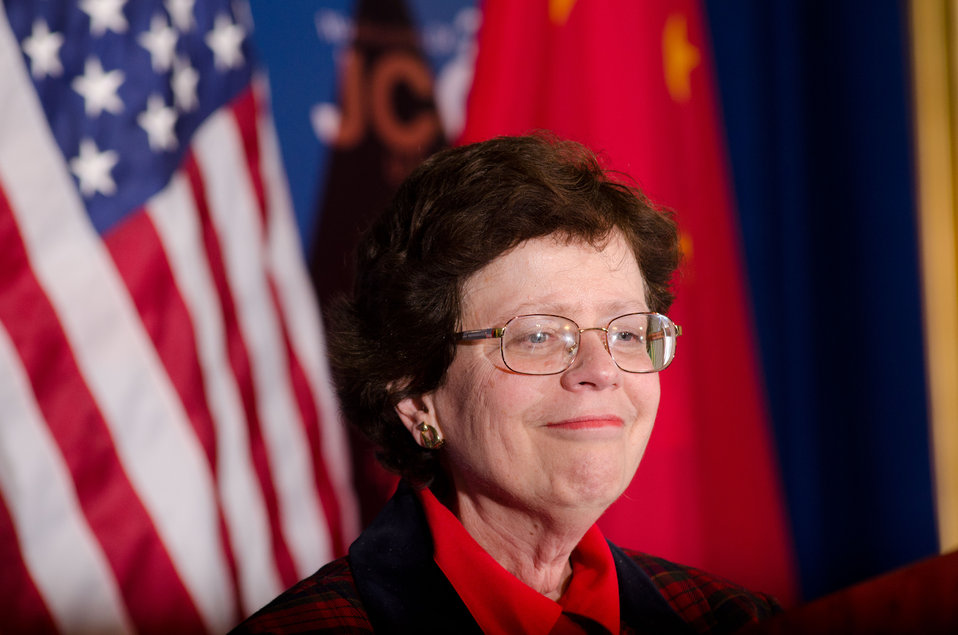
Acting U. S. Commerce Secretary Rebecca Blank listens to a question from an international news media journalist, at the 23rd Session of the U.S. China Joint Commission on Commerce and Trade (JCCT) at the Andrew W. Mellon Auditorium in Washington, D.C. on Wednesday, Dec. 19, 2012. The JCCT holds high-level plenary meetings on an annual basis to review progress made by working groups that focus on a wide variety of trade issues. These working groups meet throughout the year to address topics such as intellectual property rights, agriculture, pharmaceuticals and medical devices, information technology, tourism, commercial law, environment, and statistics.